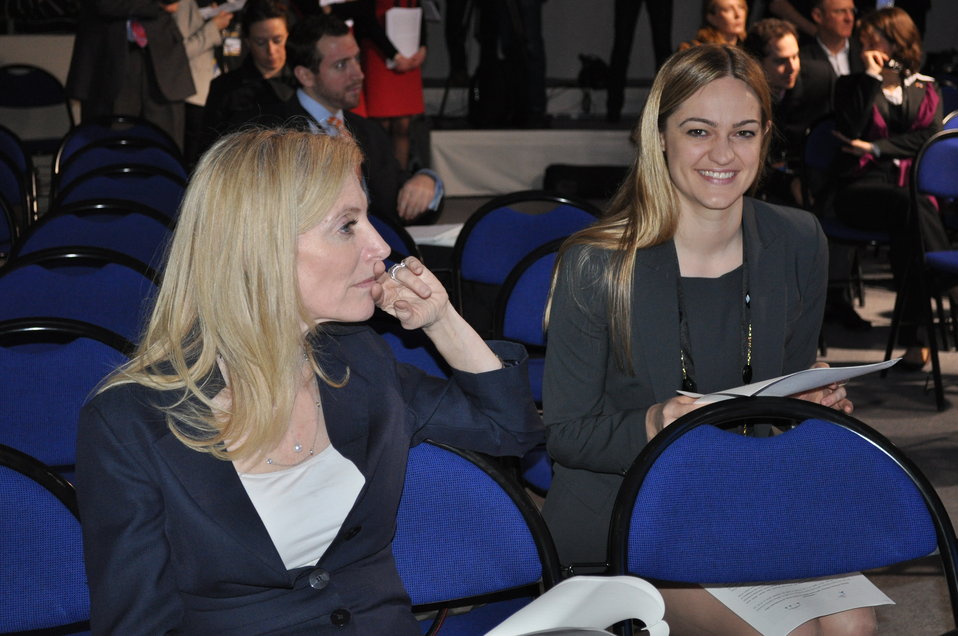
G-20 Meeting of Finance Ministers and Central Bank Governors in Paris, 02/19/2011

Under Secretary for International Affairs Lael Brainard and Senior Advisor Paige Gebhardt listen to Secretary Geithner's press conference.